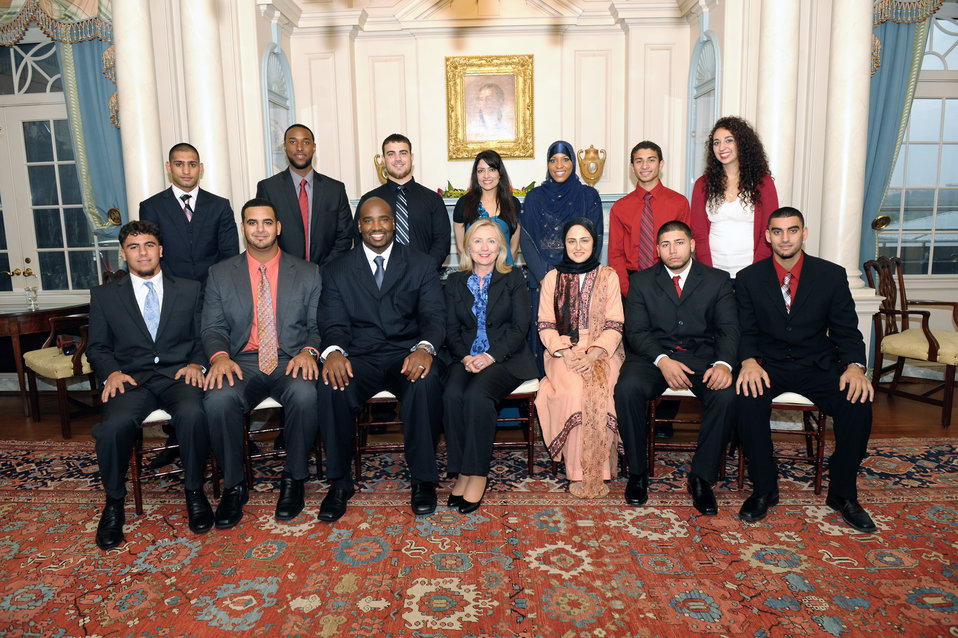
Secretary Clinton Hosts a Reception Marking Eid ul-Fitr

U.S. Secretary of State Hillary Rodham Clinton hosts a reception marking Eid ul-Fitr, at the U.S. Department of State in Washington, D.C., on September 7, 2011.